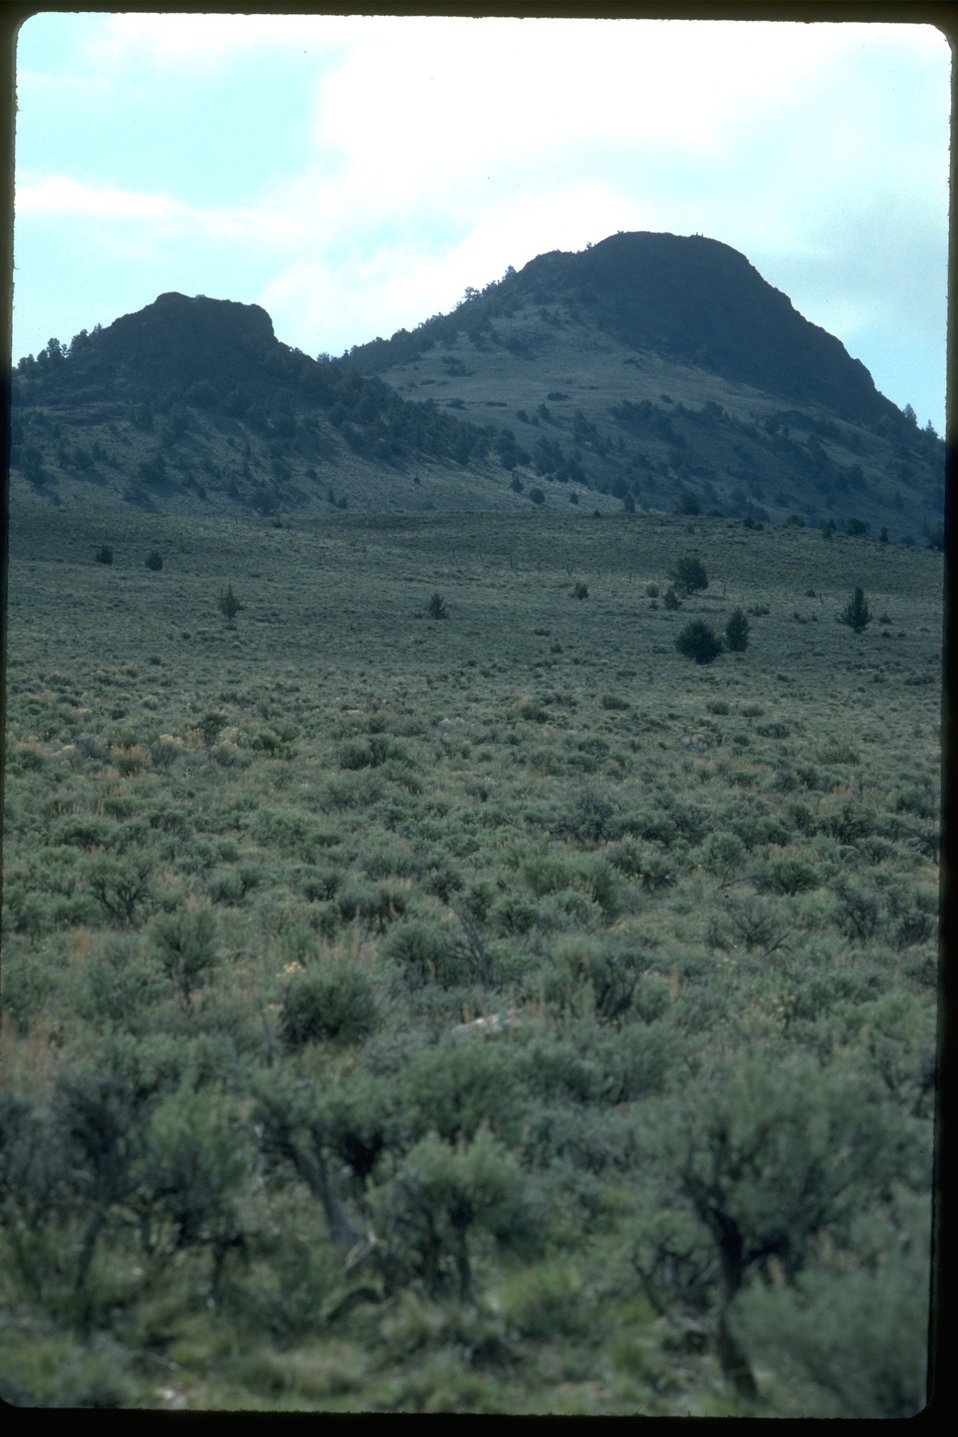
Squaw Ridge Wilderness Study Area.